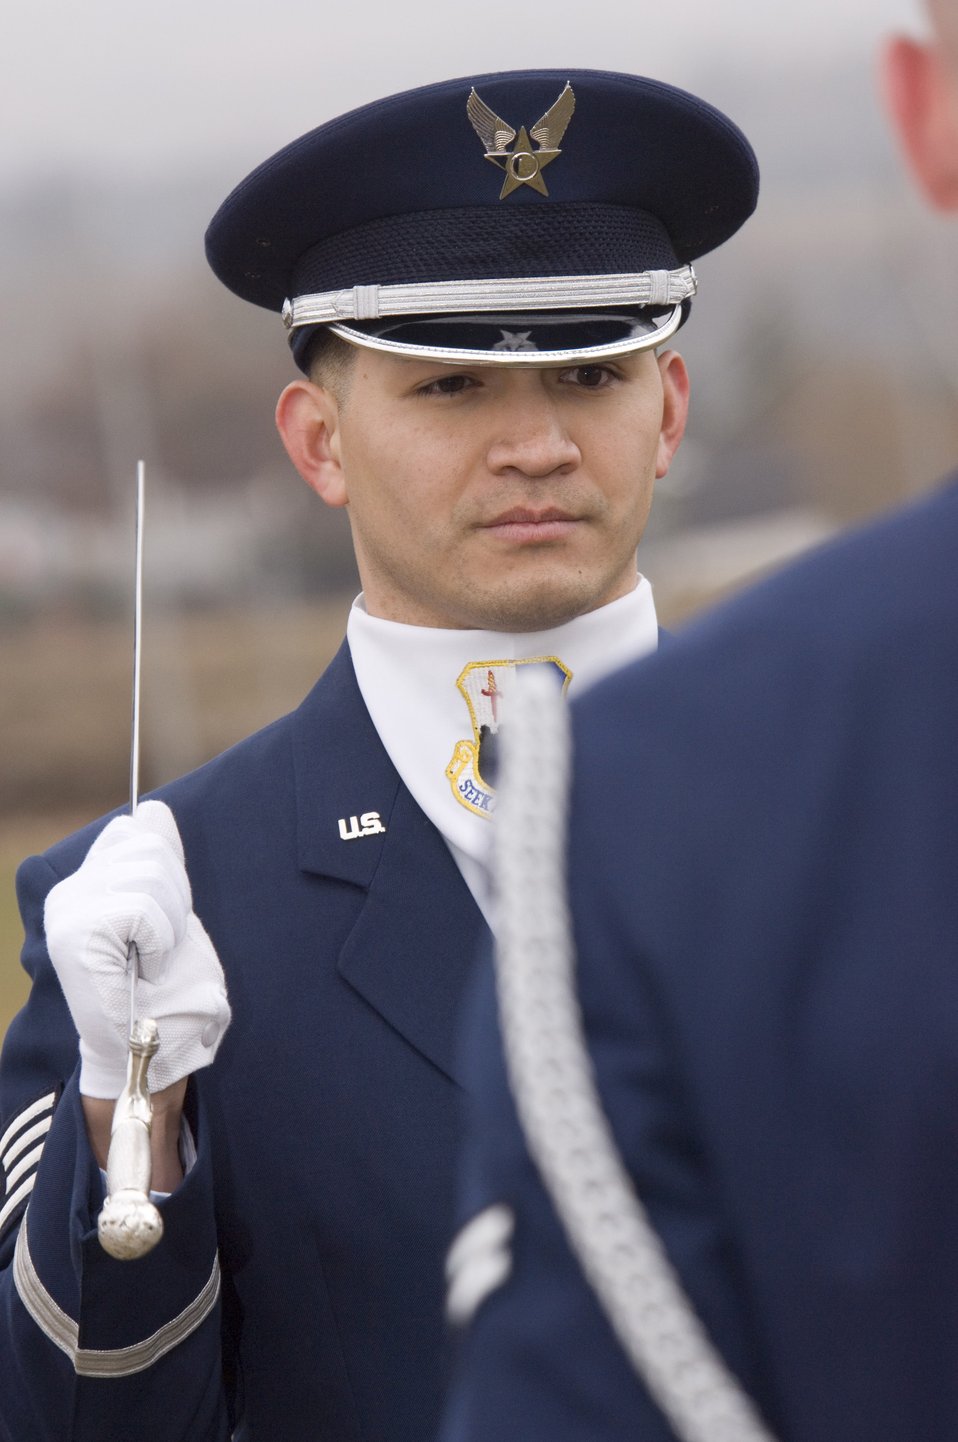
Airman toss sabers to honor comrades

Staff Sgt. Ernesto Otero catches a saber during practice at Spangdahlem Air Base, Germany, on Tuesday, March 21, 2006. Sergeant Otero is a nutritionist with the 52nd Aerospace Medical Squadron.